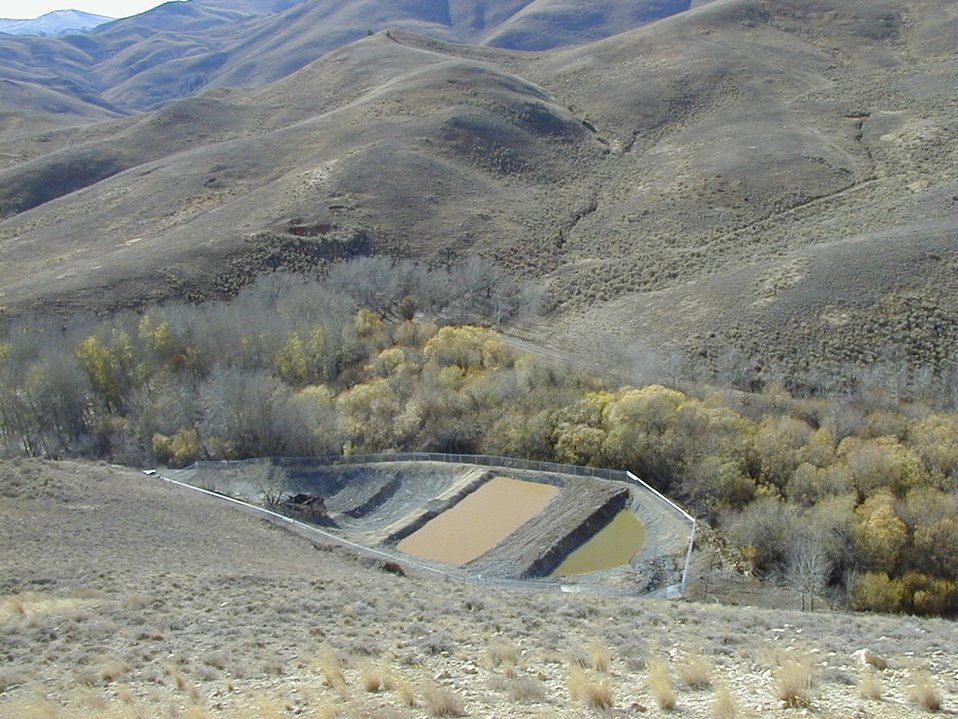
Passive Treatment, Bio-Reactor System Champagne Creek Southeastern Idaho Upper Snake River District